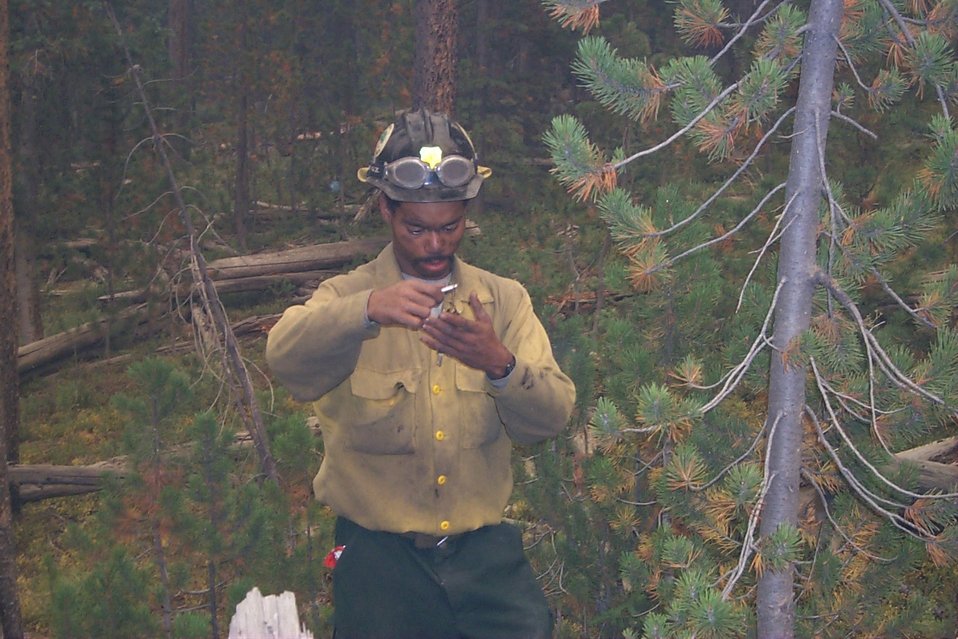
Fire fighter Fire Clearwater Fire Salmon Field Office USRD Upper Snake River District